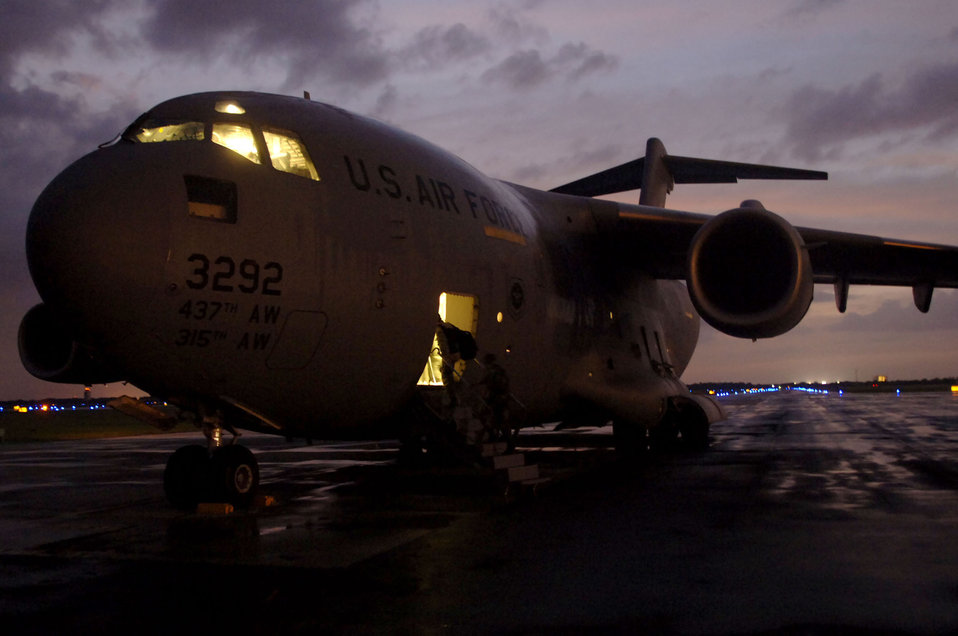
AMC aircraft, personnel supporting Hurricane Ike evacuations

Members of a mobile aeromedical staging facility team from MacDill Air Force Base, Fla., board a plane headed to Corpus Christi, Texas, to support Hurricane Ike evacuation efforts there.